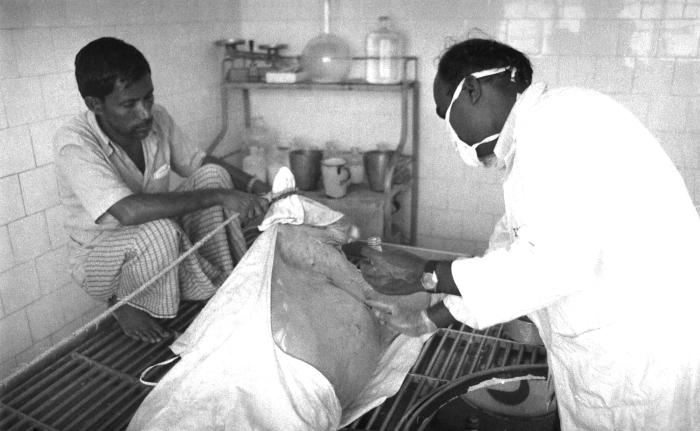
This 1975 photograph depicted a Bangladesh laboratory technician harvesting cowpox virus, otherwise known as vaccina virus, from the underbelly of a calf that had been inoculated with the virus, resulting in the formation of a maculopapular outbreak from which the would-be vaccine was distilled. The process for creating the smallpox vaccine is a long-standing procedure with a basis firmly tied to the science of epidemiology.'Edward Jenner, an English physician, used folk knowledge to find an alternative to variolation. Recognizing that dairymaids infected with cowpox were immune to small-pox, Jenner deliberately infected James Phipps, an eight year old boy, with cowpox in 1796. He then exposed Phipps to smallpox, which Phipps failed to contract. After repeating the experiment on other children, including his own son, Jenner concluded that vaccination provided immunity to smallpox without the risks of variolation. Jenner's findings were published in 1798.'